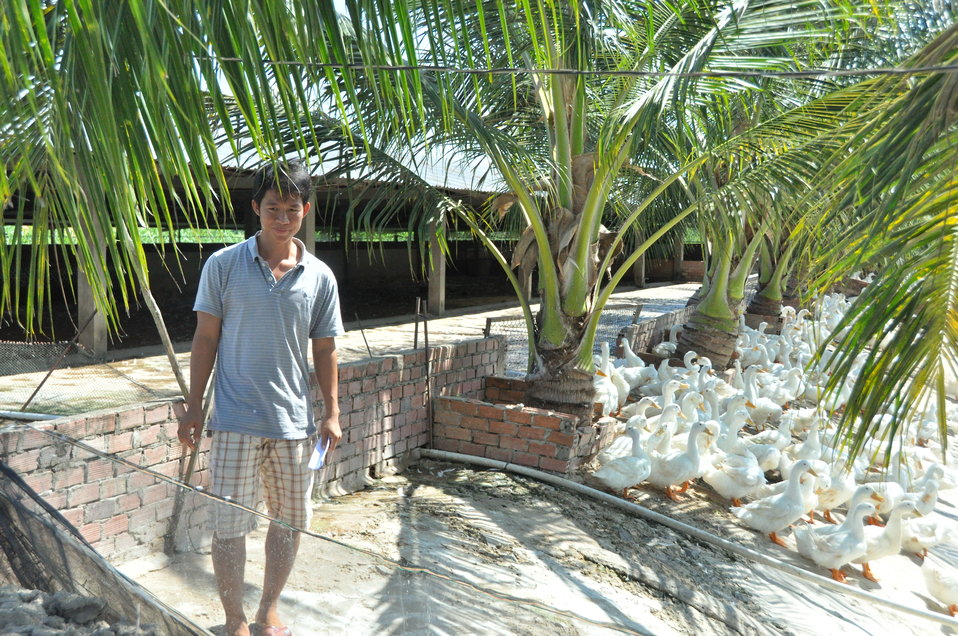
Mr. Thien at his duck farm in Can Tho

USAID Vietnam